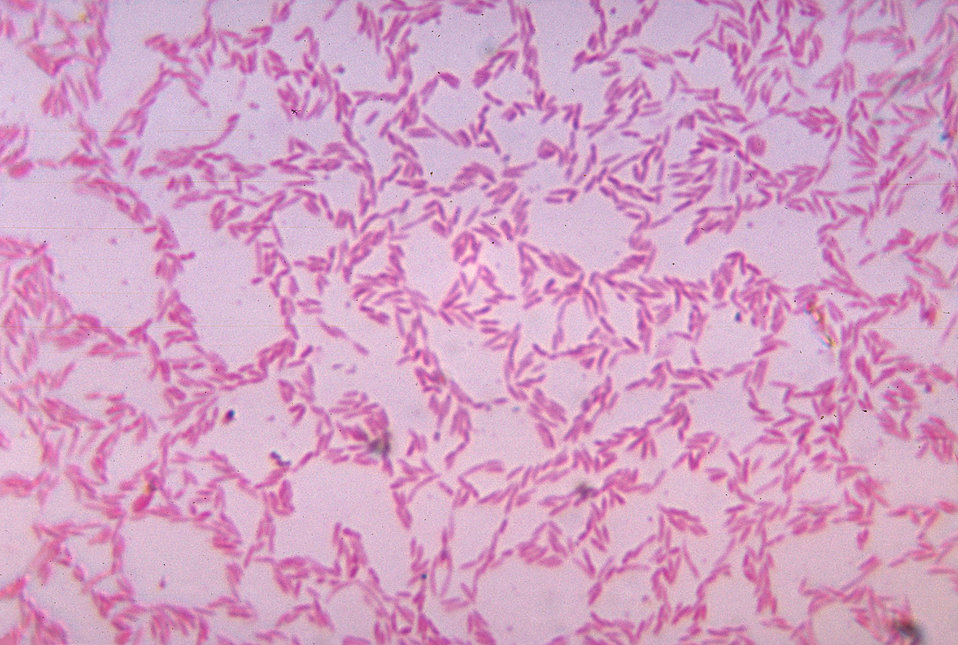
This micrograph depicts Bacteroides biacutis bacteria cultured in blood agar medium for 48 hours.